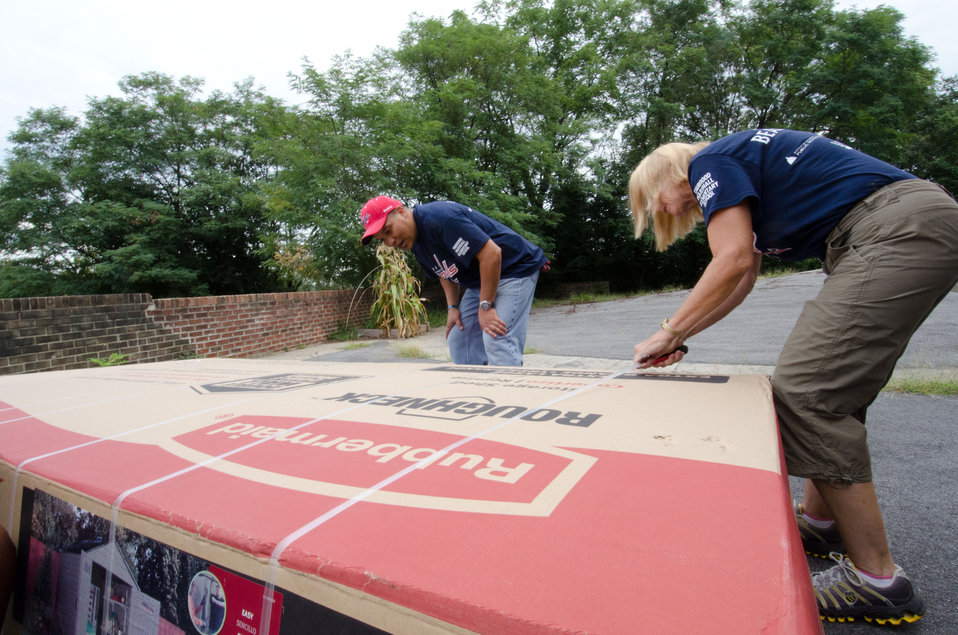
John Marshall (left) and team open the box for a prefabricated toolshed they will assemble where U.S. Department of Agriculture (USDA) People’s Garden Executive Master Gardeners, friends, and family, along with Washington Capitals fans have come to volunteer in District of Columbia Public Schools’ (DCPS) Beautification Day, on Saturday, August 25, 2012, at Thurgood Marshall Elementary School, in Washington, D.C. Each year people are invited to help “spruce up” public school facilities in preparation for the first day of school. More than 70 volunteers pitched in at this large school facility. The People’s Garden effort involves building and painting raised planter boxes, then preparing the soil mixture so they are “ready to grow.” Additionally, a team that includes descendants of U.S. Supreme Court Justice Thurgood Marshall assembles a prefabricated garden toolshed. The Justice’s son, John Marshall leads the team, which includes Brianna the Justice’s great-grand daughter in one of many multi-generational efforts at this school today. Washington Capitals Forward Mike Riberio, his family and mascot Slapshot participated in every project underway at Marshall School. From the outside gardens, to inside murals, and robotics worktable construction, the teams made their goals.